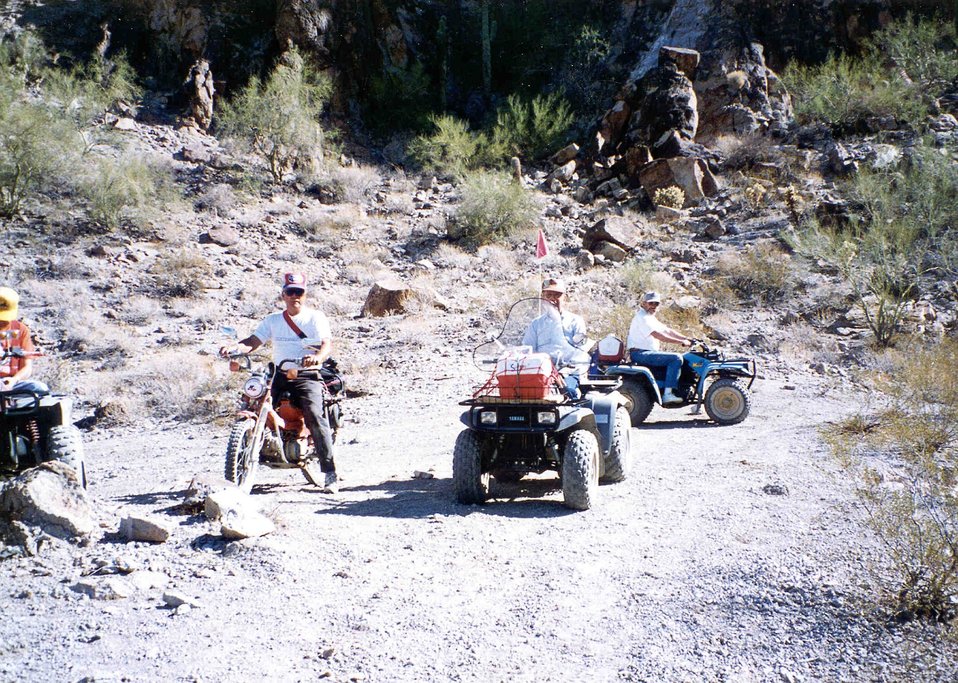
Recreationists riding all terrain vehicles and motorcycles on public lands